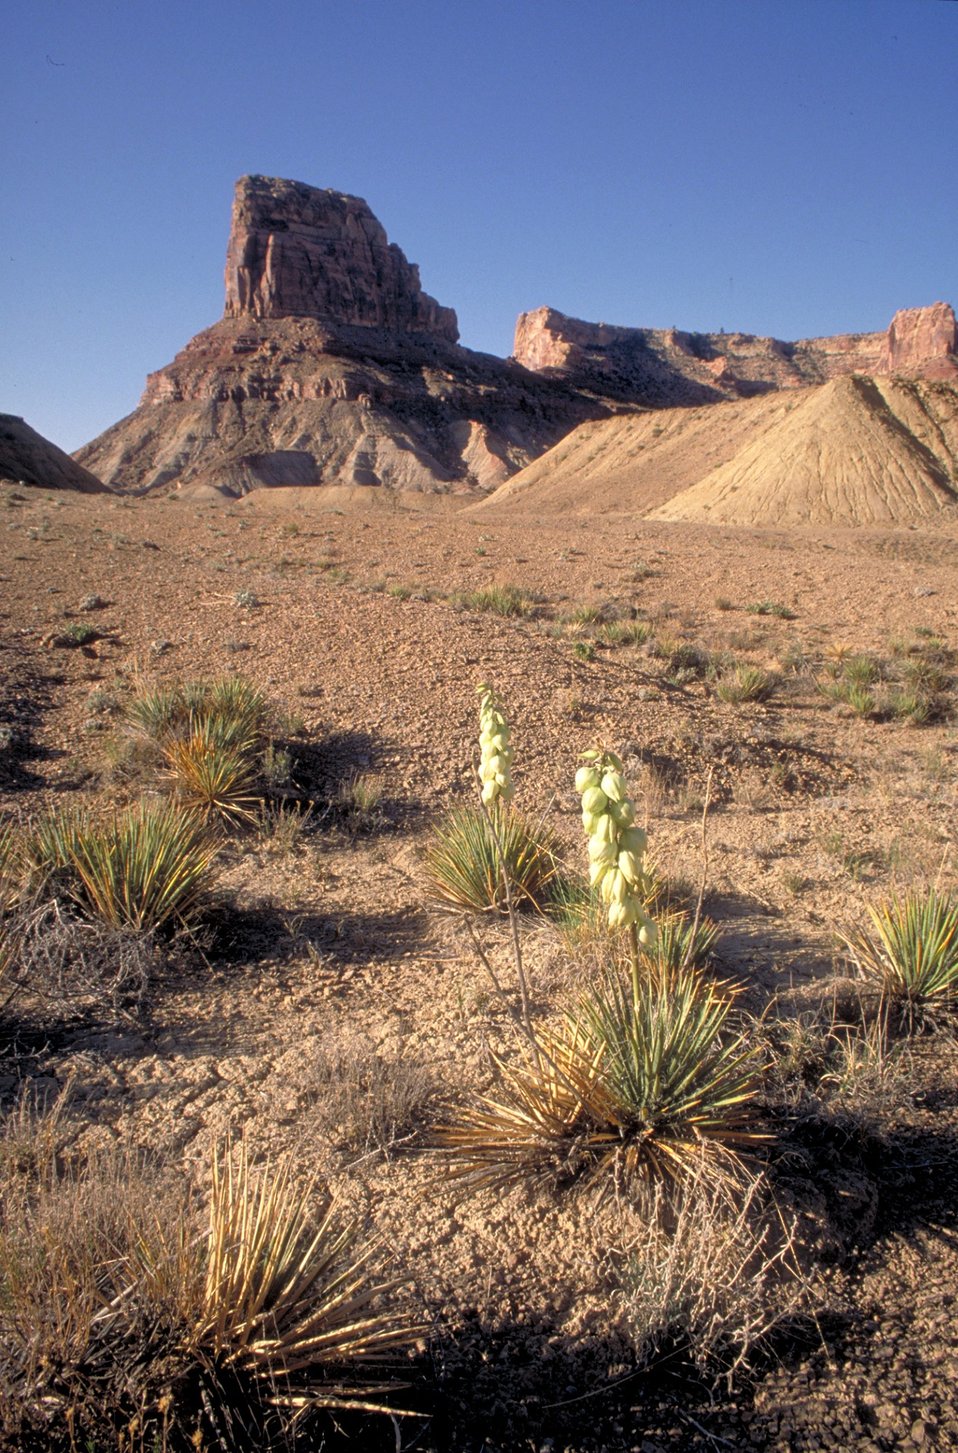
Bottleneck Peak, San Rafael Swell.